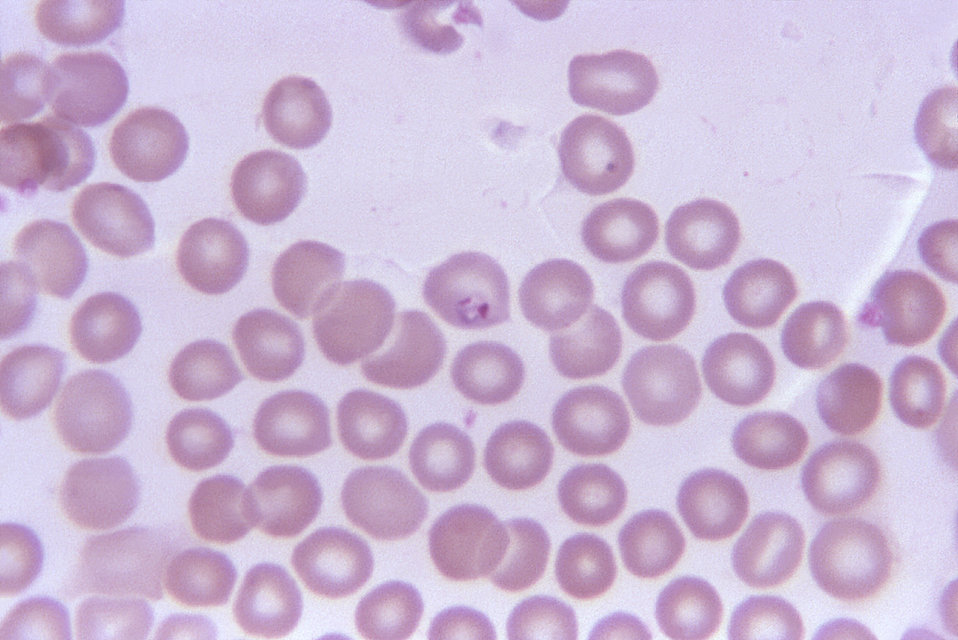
This photomicrograph revealed the presence of an "older ring-form" of a Babesia sp. protozoan parasite in a blood smear. This older ring-form was located within an erythrocyte, and was displaying two chromatin masses.